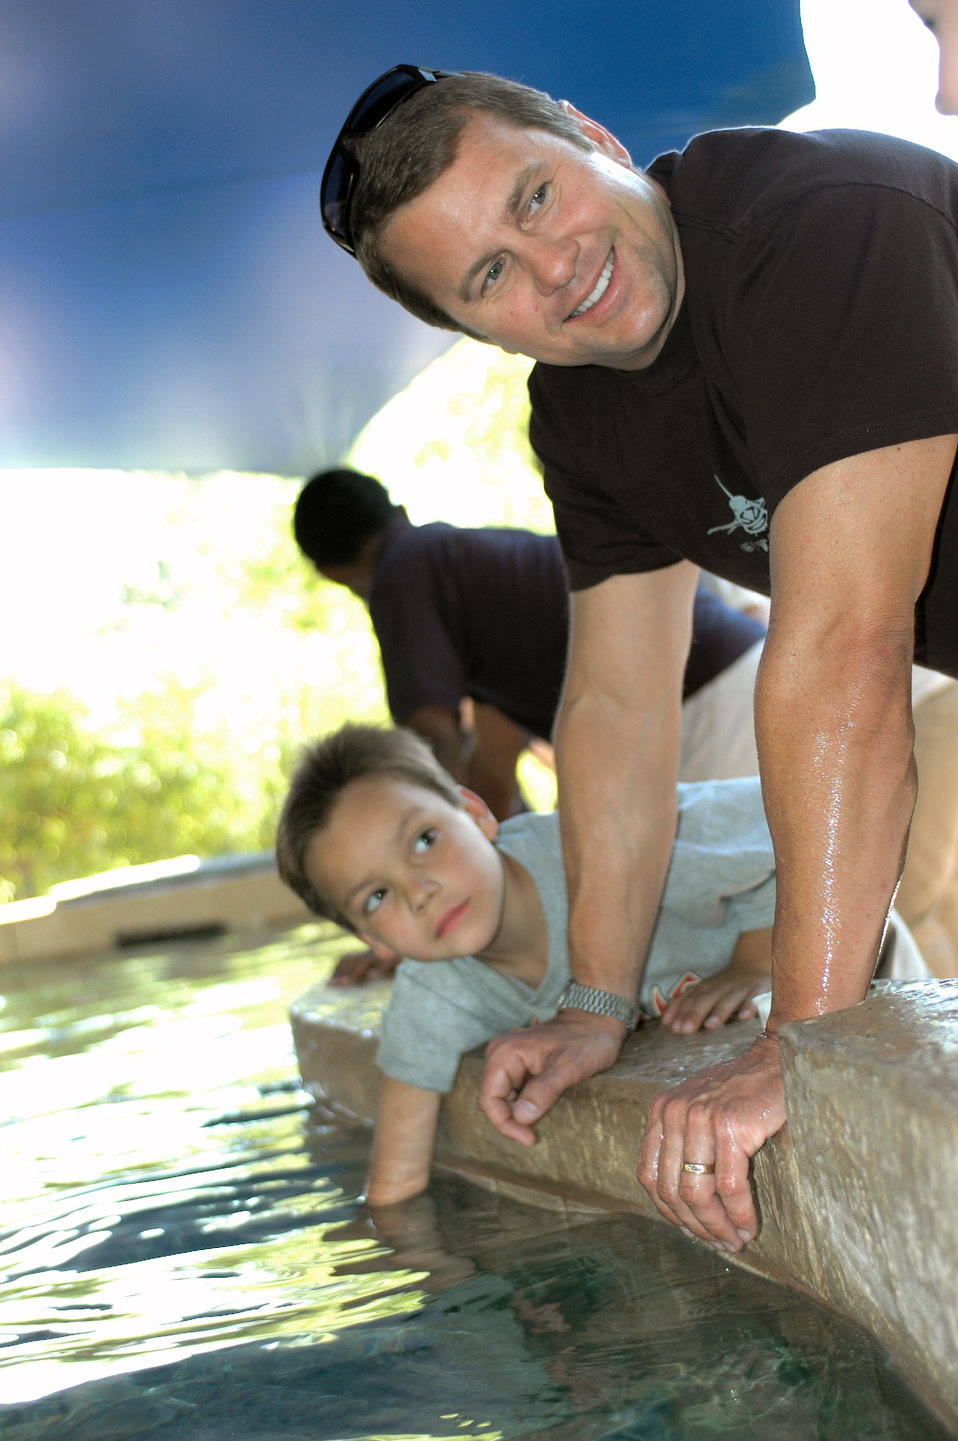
Airman Volunteers as Boy's

Dominic Magne and Lt. Col. Scott Reinhold pet stingrays and sharks at the Phoenix Zoo, Oct. 30. The second-grader and the F-16 pilot have remained friends since Dominic visited the 162nd Fighter Wing in Tucson, Ariz., last year to fulfill his dream to become a fighter pilot.